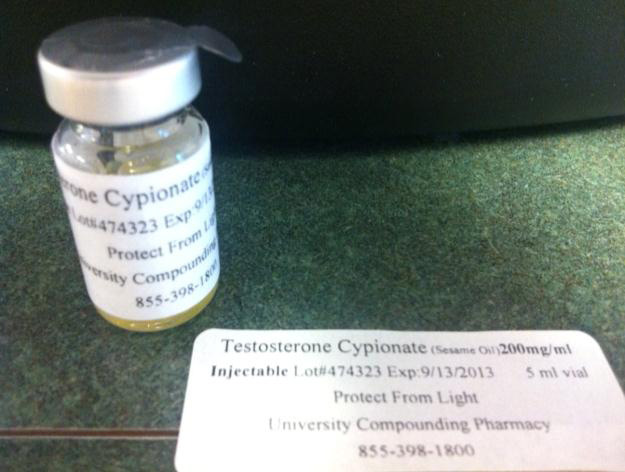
RECALLED – Testosterone Cypionate (Sesame Oil), Testosterone Cypionate/Testosterone Proprionate, PGE-1 NS, more

September 6, 2013 – Product Recall – University Compounding Pharmacy Initiates a Nationwide Voluntary Recall of Certain Pharmacy Products due to Lack of Assurance of Sterility Concerns
.